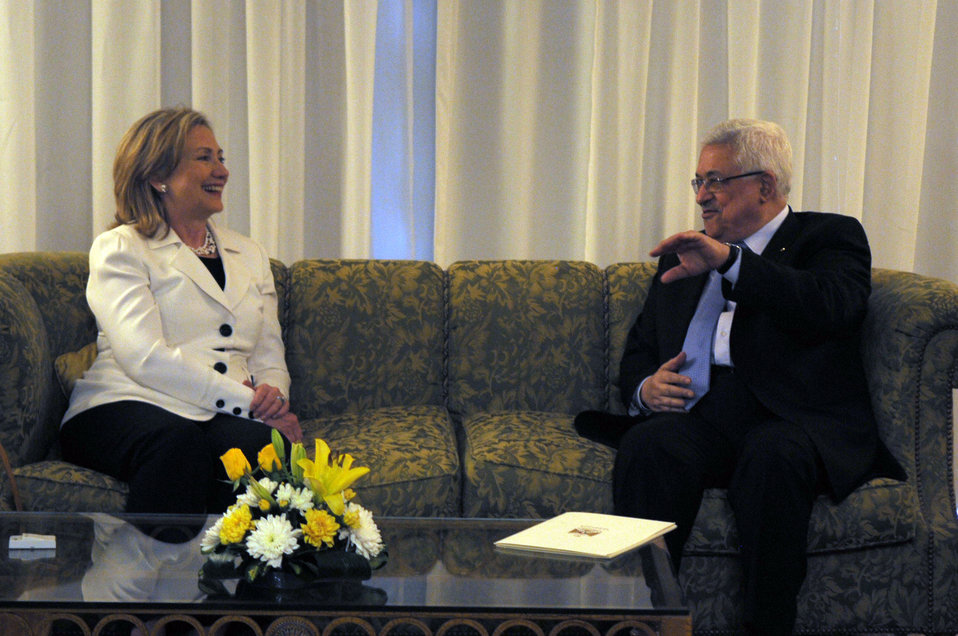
Secretary Clinton Meets With Palestinian President Abbas

U.S. Secretary of State Hillary Rodham Clinton meets with Palestinian President Mahmoud Abbas in Sharm El-Sheikh, Egypt, on September 14, 2010.